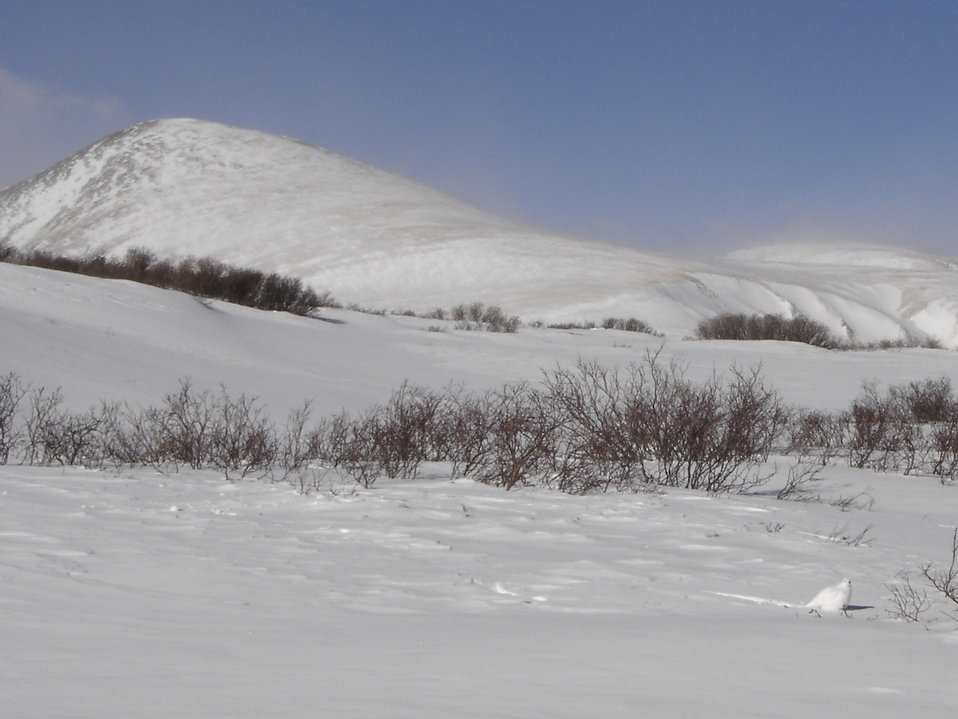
Small White-tailed Ptarmigan in Alpine Climate

Male and female white-tailed ptarmigan share similar body size, shape, and winter plumage, with adult body lengths up to 13.4 inches (34 centimeters) and body masses up to 0.9 pound (425 grams). Both the southern and Mt. Rainier white-tailed ptarmigan are white in winter and brown in summer, the feathers changing color with the seasons to camouflage the birds. Although the body feathers change color, the white-tailed ptarmigan is named for its perpetually white tail feathers, a morphological trait that distinguishes it from other ptarmigan species. During the winter, males and females are stark white and difficult to distinguish from the background of snow. In the summer during the breeding season, males turn a lighter color of brown or gray than females and develop a dark band of feathers on the breast that resembles a necklace.

During the winter, the southern and Mt. Rainier white-tailed ptarmigan feed on exposed willows above the snow and dig roosts, or burrows, into the soft snow as protection from wind and weather. During the summer, the white-tailed ptarmigan feeds on willows and other alpine vegetation. White-tailed ptarmigan require cool temperatures, rocky areas, soft snow, and the presence of willows. The southern and Mt. Rainier white-tailed ptarmigan spend their entire lifecycles in alpine habitats and are well adapted to survive in the cold, arid, and open alpine environments. Adaptations of the white-tailed ptarmigan to these alpine environments include its cryptic plumage, low metabolic rates, and heavily feathered feet that act as snowshoes.